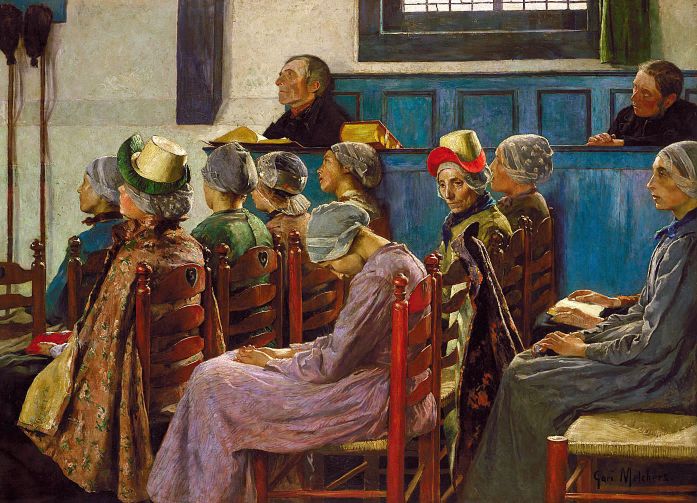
Die Predigt